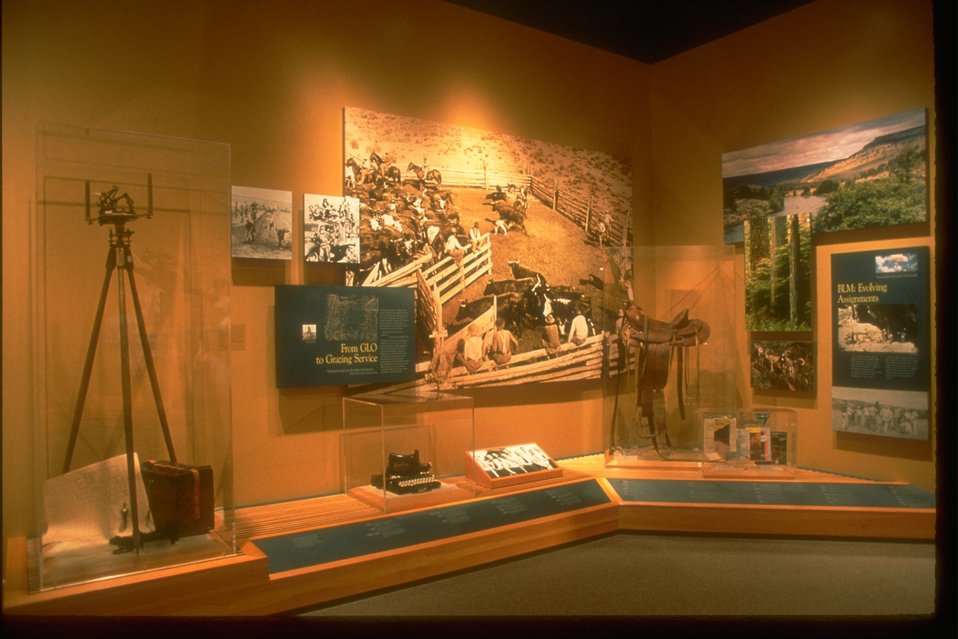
BLM history exhibit with pictures, stories, old camera stand and camera, typewriter, saddle, and books.